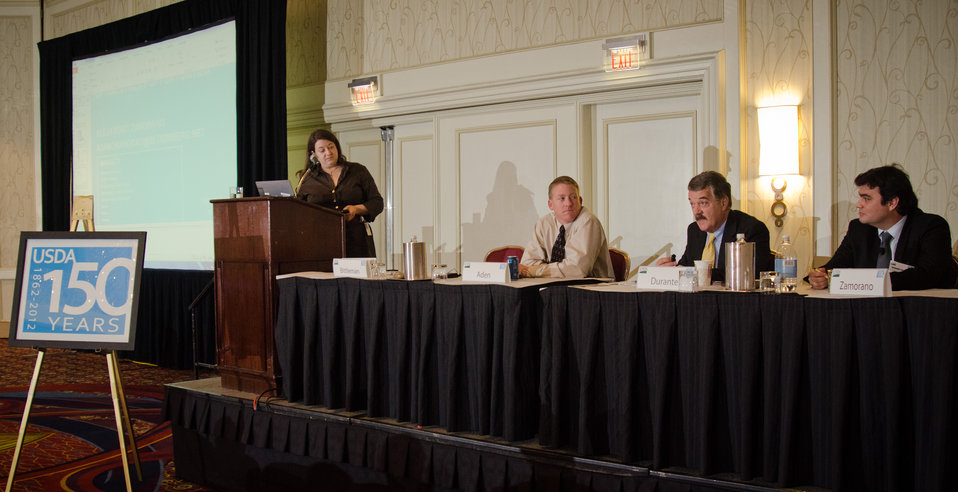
Agriculture Senior Advisor to the Secretary and session moderator Sarah Bittleman (left), refers a question to Clean Fuels Development Coalition Executive Director Douglas Durante (second from right), during the Renewable Energy session on “Moving Renewable Energy Forward,” at the 2012 Agricultural Outlook Forum, “Moving Agriculture Forward, Growing, Innovating and Celebrating 150 Years” held at the Crystal Gateway Marriott Hotel in Arlington, Virginia, on Thursday, February 23, 2012. This year’s forum coincides with the 150th anniversary of the Department of Agriculture addressing economics, marketing, research, food safety, nutrition, conservation, rural development, alternative energy, trade and many other agricultural issues.